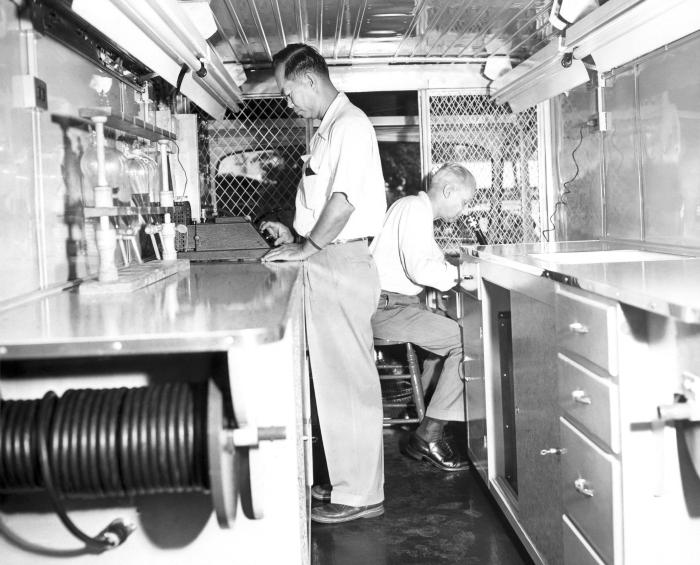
This 1952 photograph provided by the Center for Disease Control's (CDC), National Institute for Occupational Safety and Health (NIOSH), depicted two public health workers from the Territorial Department of Health, Bureau of Industrial Hygiene in one of its Mobile Laboratory vehicles in Hawaii. These technicians were in the process of gathering data that would be compiled, and later used during epidemiologic public health studies. The convenience of bringing the public healthcare system directly to the population immeasurably facilitated the delivery of proper healthcare to the average person, especially in rural areas..